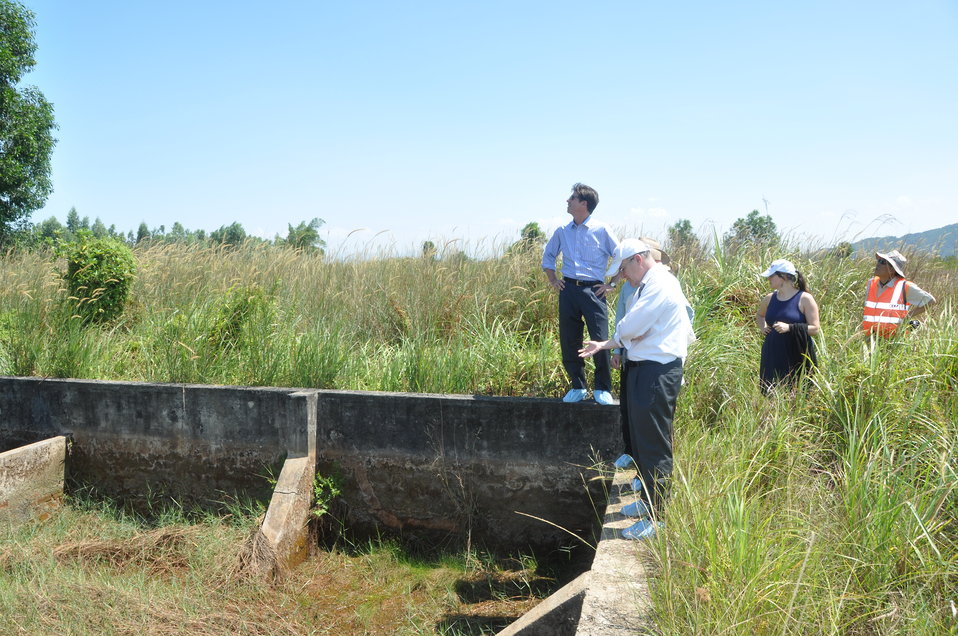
USAID Deputy Administrator Donald Steinberg and delegation visit Danang Airport

USAID Deputy Administrator Donald Steinberg Visits Vietnam